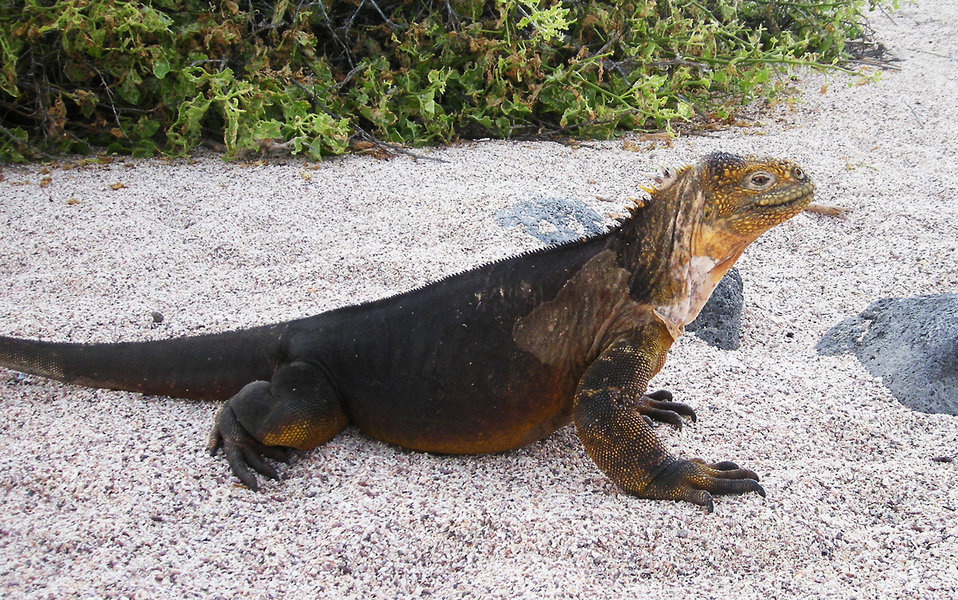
Land iguana ii

Galapagos, april 2011.